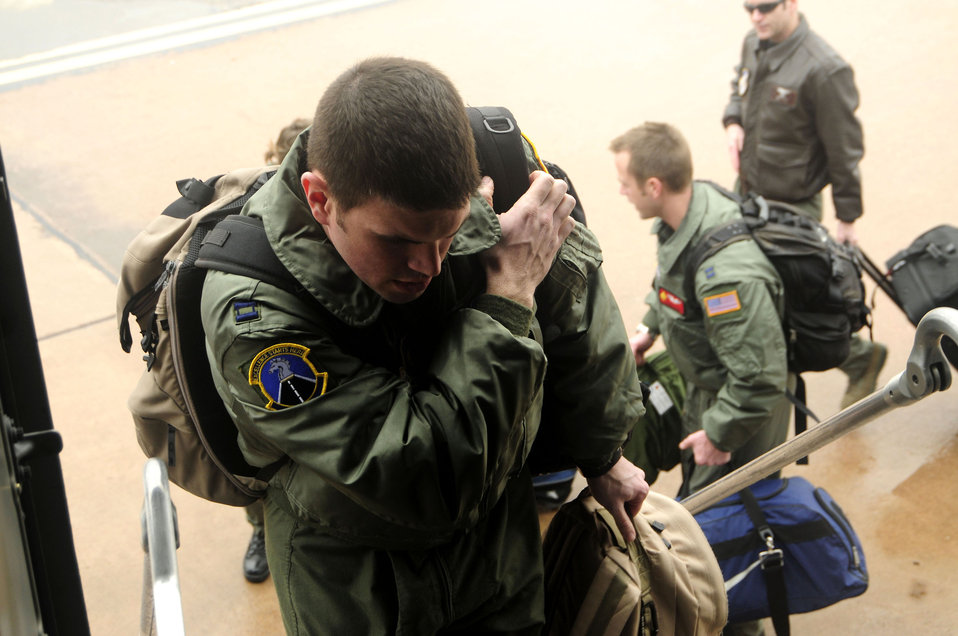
Capt. Jake Fox boards a C-17 Globemaster III Feb. 4, 2010, from Altus Air Force Base, Okla. Pilots from Altus AFB relocated to Lackland AFB, Texas, to resume training because of the severe ice storm that swept through Altus AFB Jan. 28. Captain Fox is a student pilot from the 97th Training Squadron.